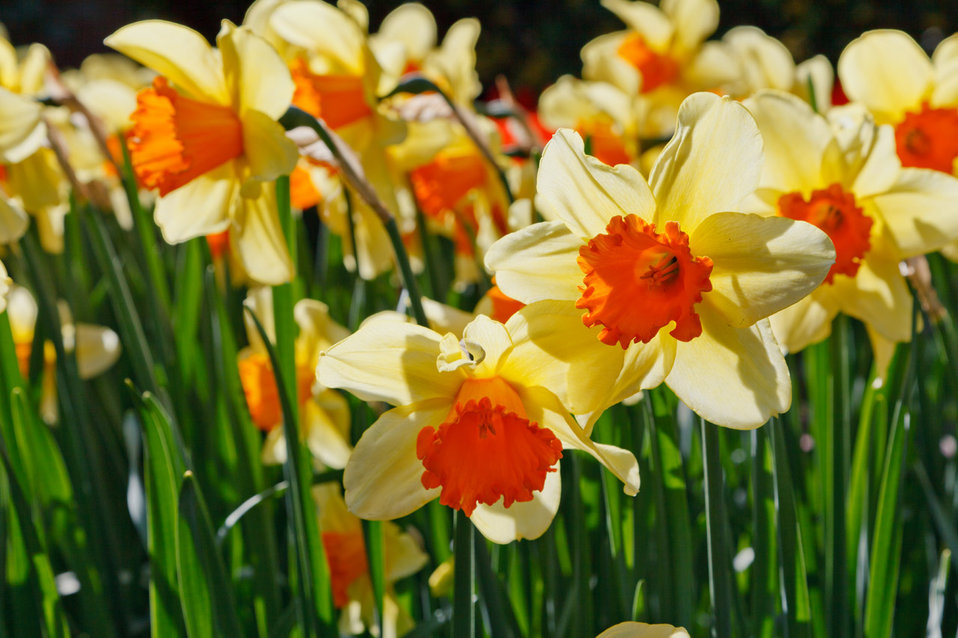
Daffodils glowing

Yellow daffodils glowing in back light.